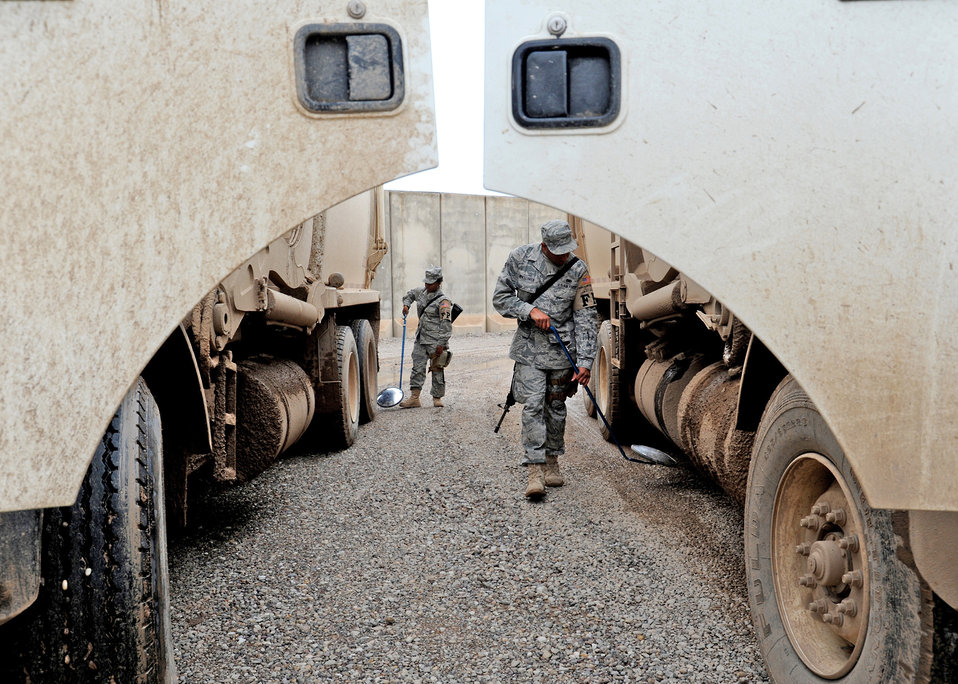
Force protection Airmen add another layer of armor in base defense

Senior Airman Milton Whittaker and Airman 1st Class Midelyne Camille check the underside of vehicles entering the gravel yard for prohibited items Nov. 19, 2009 at Joint Base Balad, Iraq. Airmen deployed as FP escorts protect resources while providing safety and security on Joint Base Balad. Airmen Whittaker and Camille are 332nd Expeditionary Civil Engineer force protection escorts.